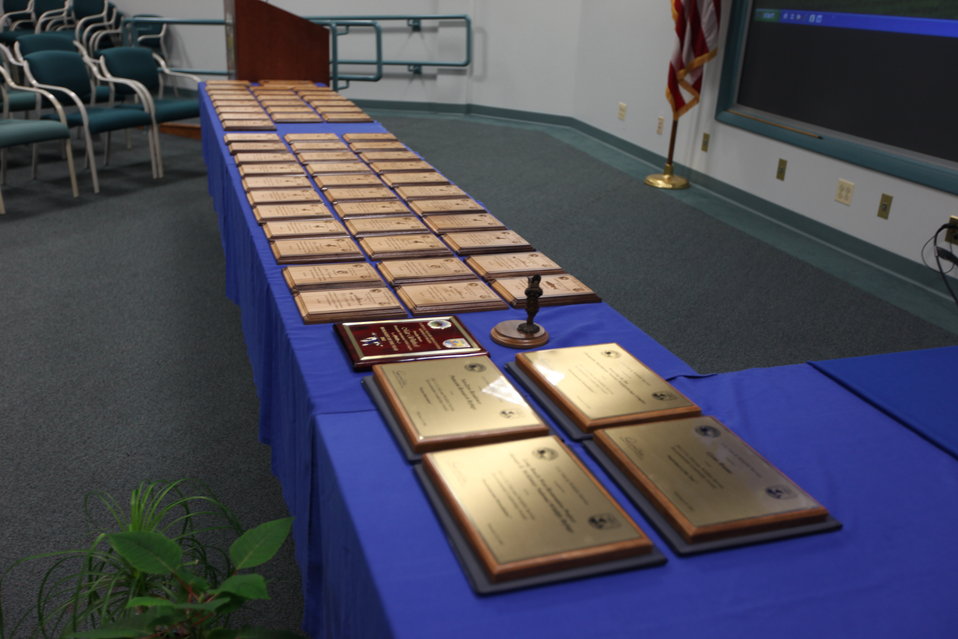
Northeast Region Employee Appreciation Awards